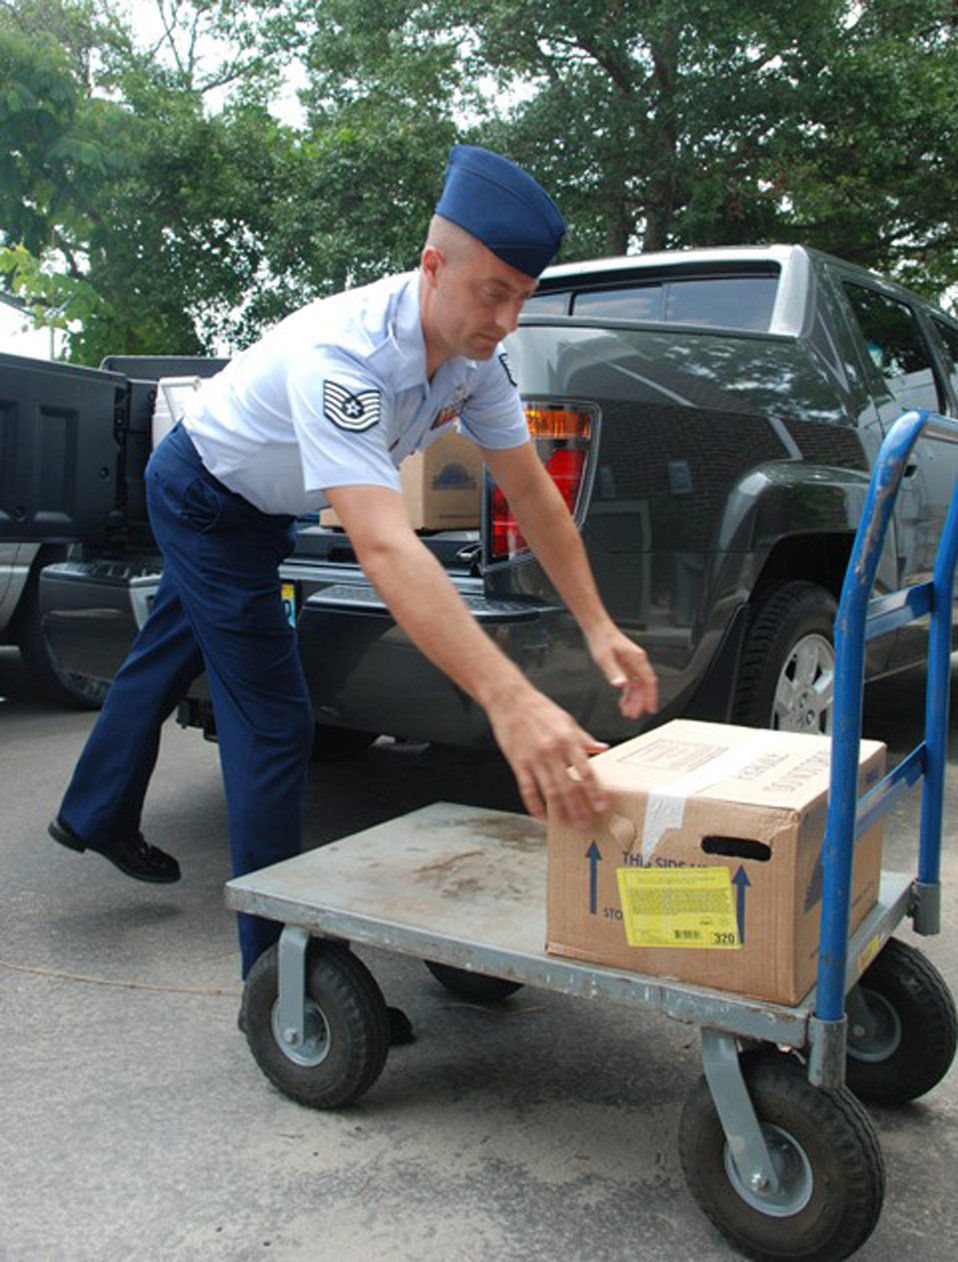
Tyndall Airmen participate in Meals on Wheels program

Tech. Sgt. Joe Ezell, from the 601st Air and Space Operations Center at Tyndall Air Force Base, Fla., loads up meals to deliver to elderly and disabled citizens in the community as a part of the local Bay County Council on Aging Meals on Wheels program.